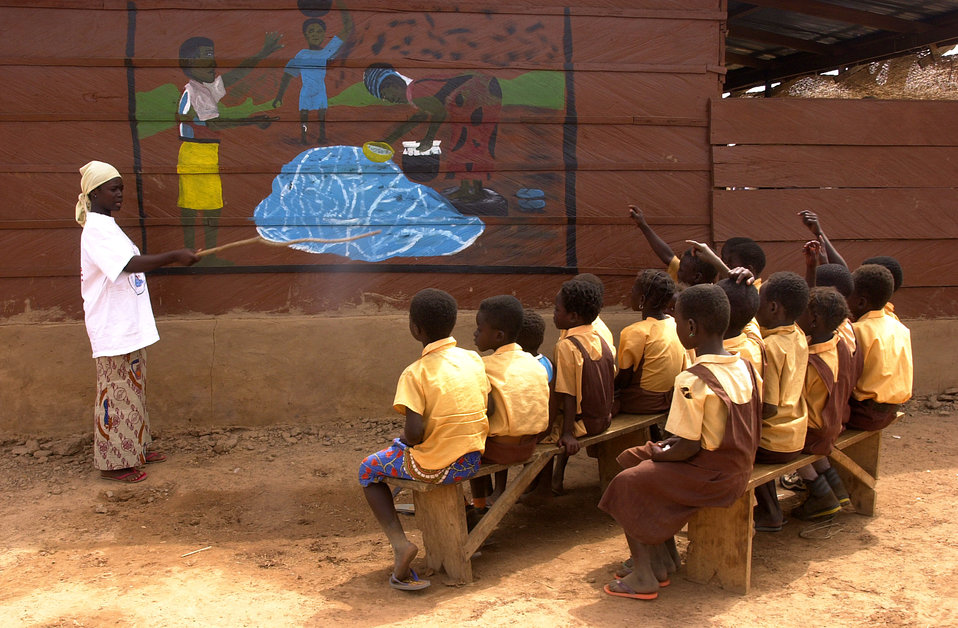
This 2004 image depicts a group of Ghanaian students learning how to protect themselves from Guinea worm disease (GWD) through the instruction of a Red Cross volunteer. The volunteer uses a wall mural painted on the side of a Guinea worm case containment center that describes GWD, its symptoms, and the methods one must practice in order to avoid human infection.The wall mural depicts three people discussing what the infected man in the middle must do, in order to treat his Guinea worm infection, as they stand on the banks of a contaminated pond. Note the Guinea worm emerging from the infected man's left leg, as well as the filter cloth covering a water collection pot, filtering the collected pond water being poured into the pot by the woman to the right.